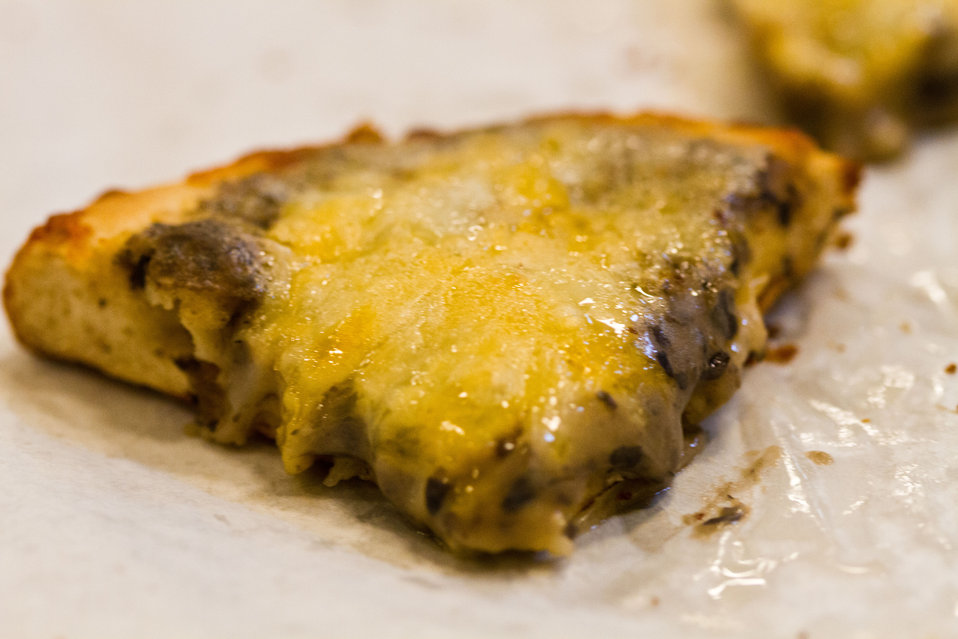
Black bean filled pizza was a real crowd pleaser with more than 50 students from the 5th grade classes taste tested at Yorkshire Elementary School in Manassas, VA., during a taste testing of the new school lunch menu created to meet the new standards. Students tested a sample menu of black-bean filled pizza, pineapple spear, plantain, sunny broccoli and cauliflower toss, and an apple and celery cup with sunbutter dip (a peanut butter substitution), on Wednesday, September 5, 2012.